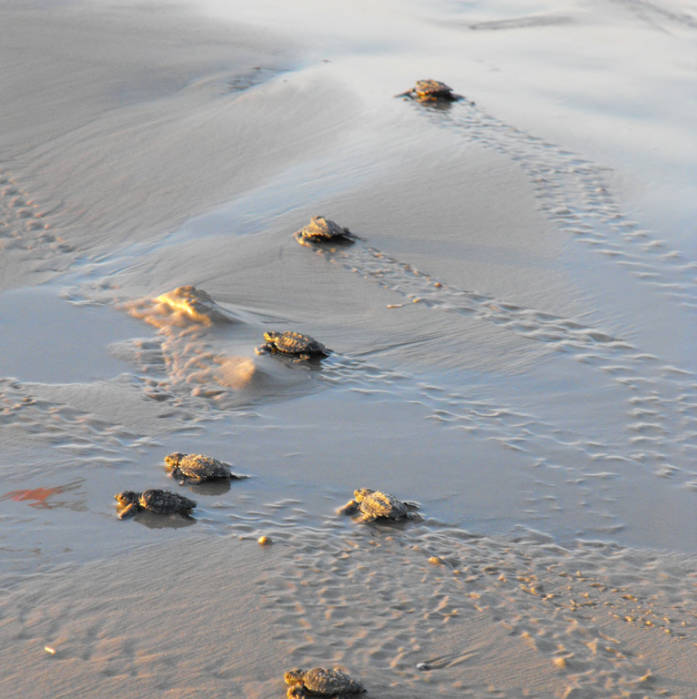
turtle hatchlings